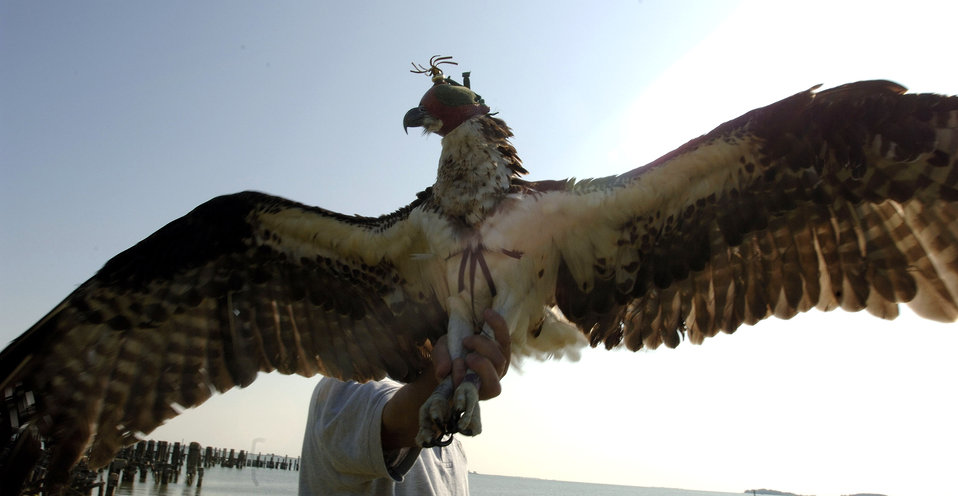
Osprey tracking

Brian Dorr of the U.S. Department of Agriculture shows the wing span of an osprey at Langley Air Force Base, Va., on Wednesday, May 17, 2006. The department is collecting, tagging and tracking the birds to reduce conflicts with base aircraft.